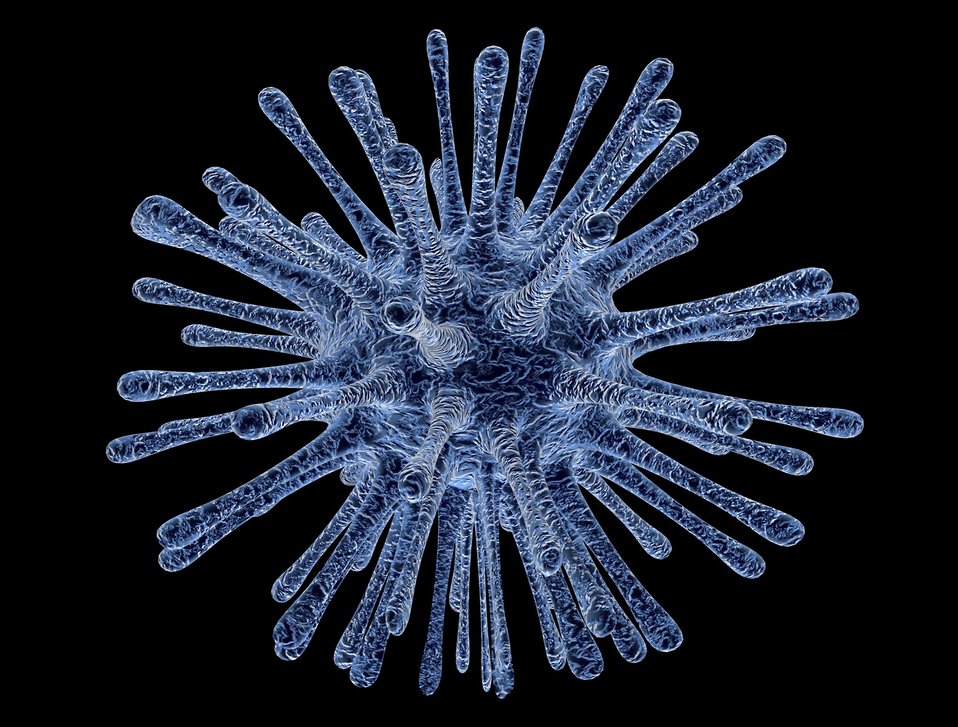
Virus

Cell virus.